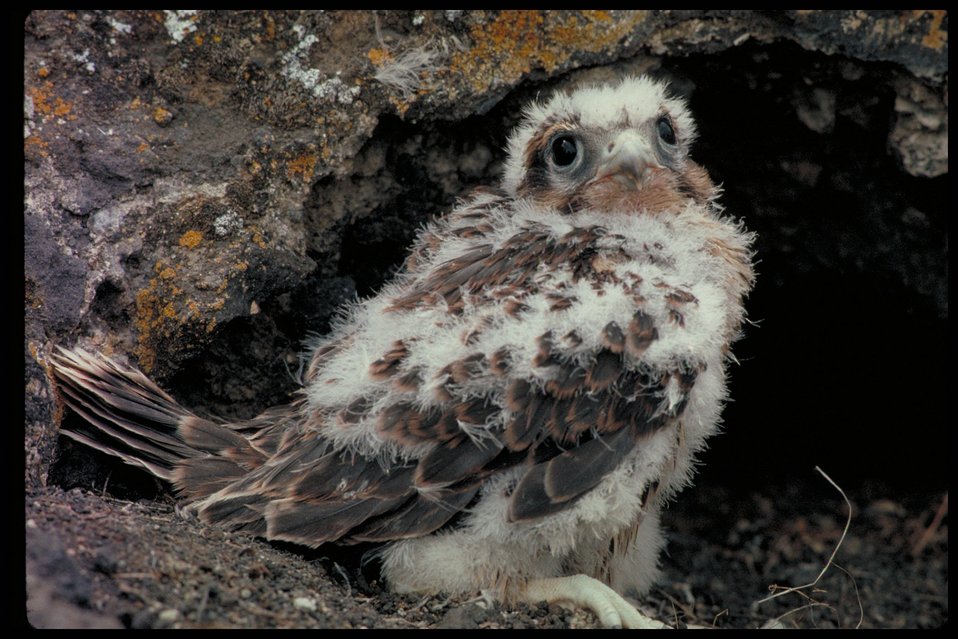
Birds of Prey National Conservation Area BOP Owyhee Field Office LSRD Lower Snake River District